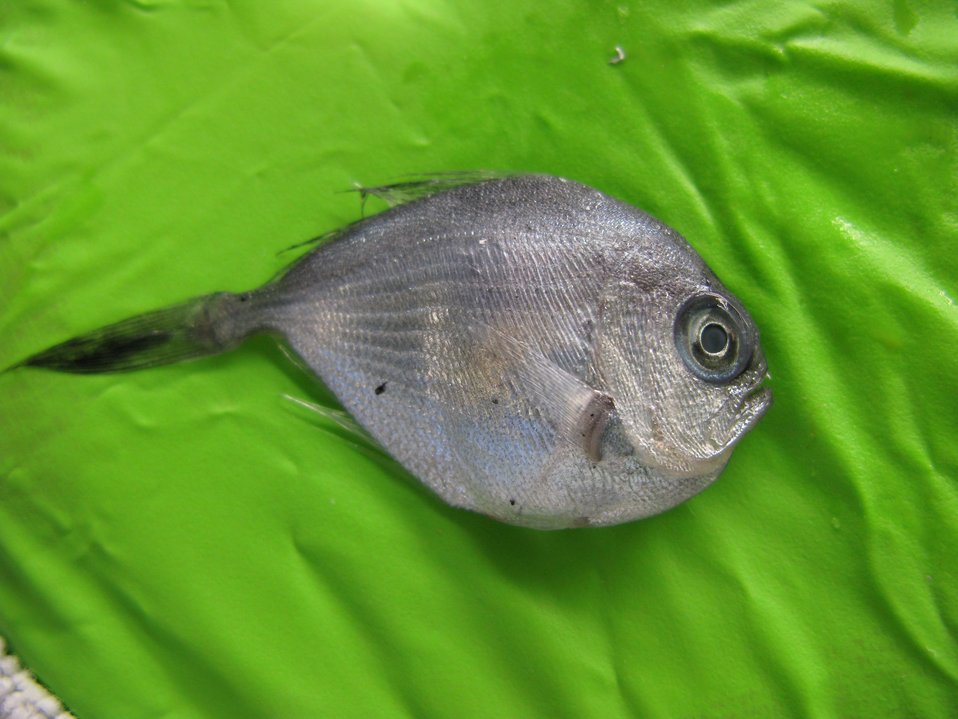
Longwing spinyfin (Diretmoides pauciradiatus)